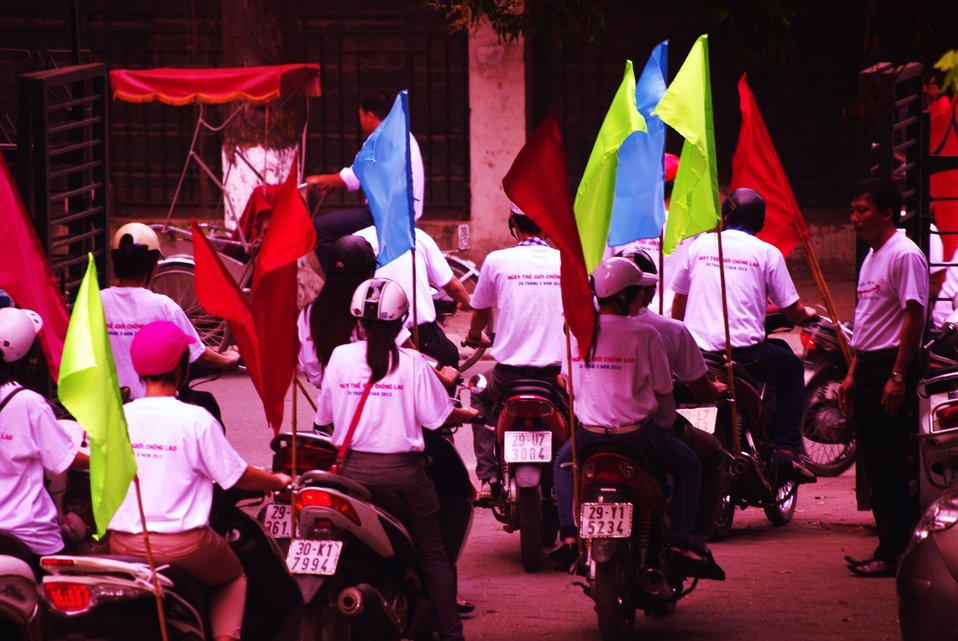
World TB Day in Hanoi: Students take to the streets with the message: Let's Stop TB in our Lifetime

March 23, 2013